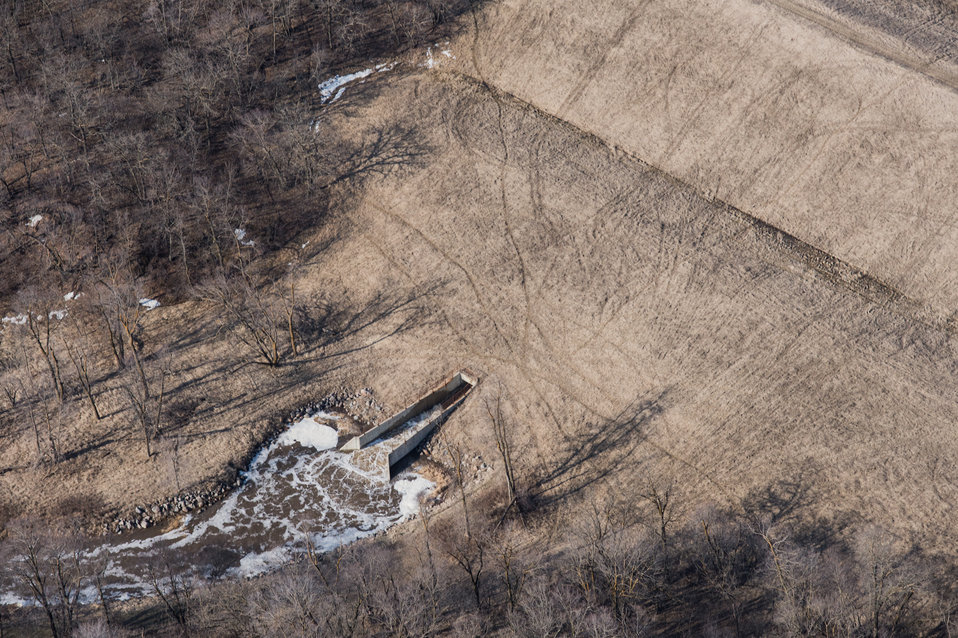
Larimore Dam outlet, a Public Law PL83-566 Small Watershed Program, in Grand Forks County, ND, on Wednesday, May 1, 2013.